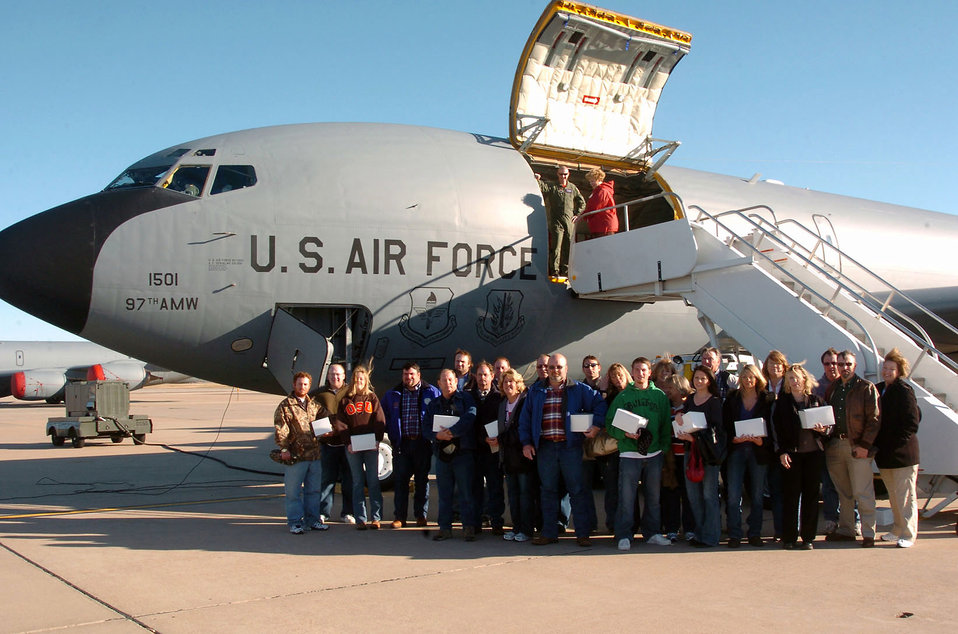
Altus community members spend time in sky

Neighbors of Altus Air Force Base, Okla., visited the base Nov. 14 as part of the Farm-City community outreach program. Some of the guests experienced an air refueling mission from the perspective of the KC-135 Stratotanker (shown) and others from the receiver, a C-17 Globemaster III.